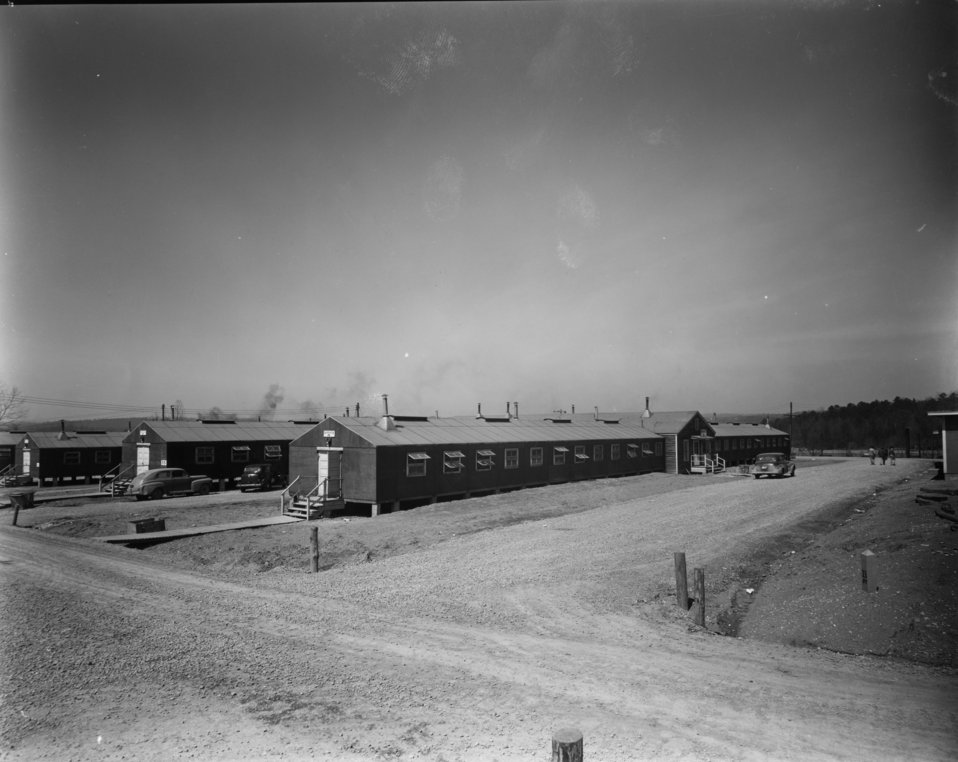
Army Activity at Oak Ridge